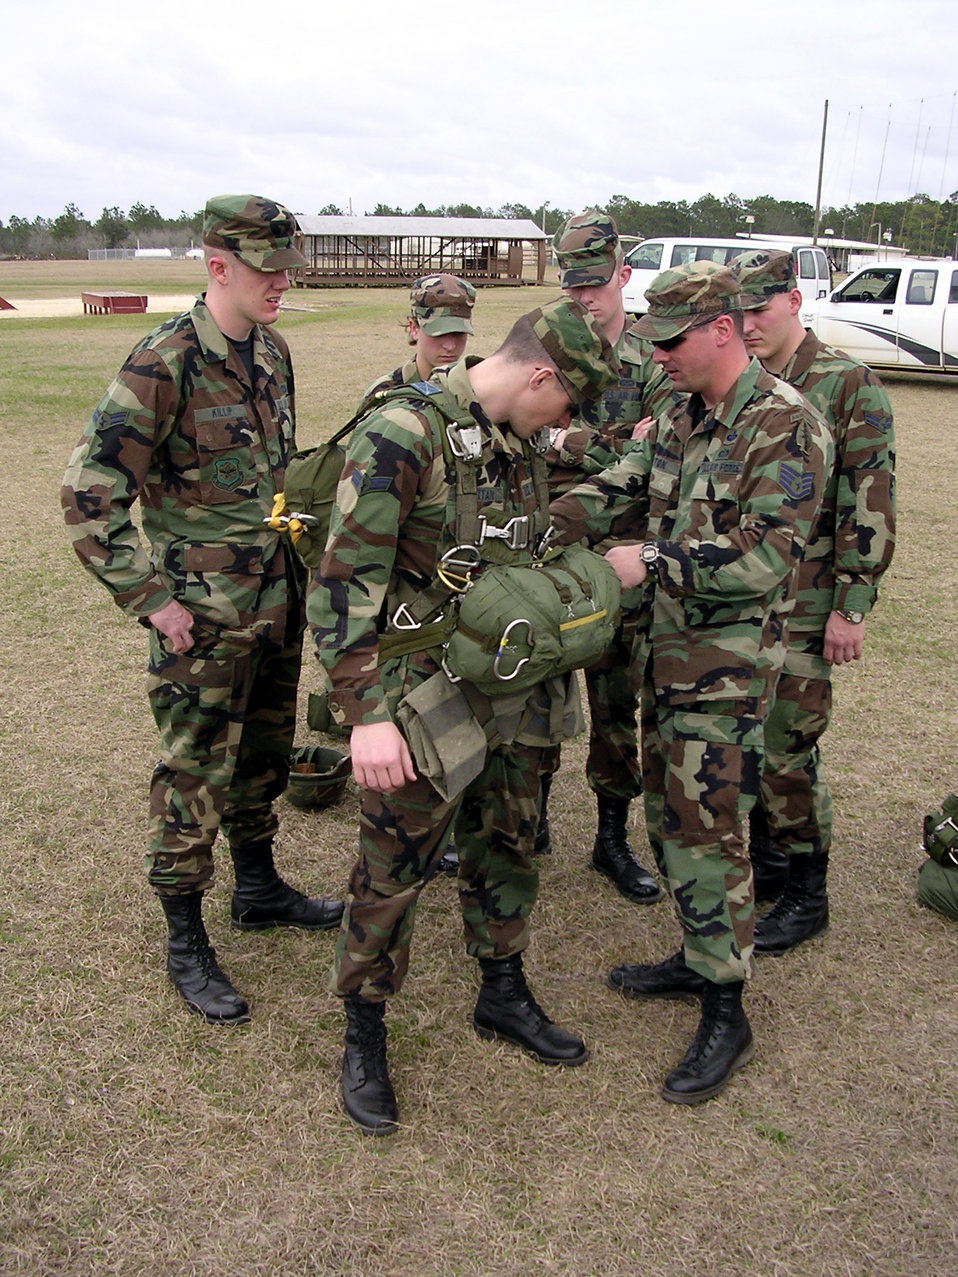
Weather recruiting seminar

HURLBURT FIELD, Fla. -- Staff Sgt. Mike Burton assists Airman 1st Class Kevin Strattan with the static line parachute rig during a special operations and airborne weather familiarization and recruiting seminar here. Sergeant Burton is a special operations weather forecaster assigned to the 10th Combat Weather Squadron's Detachment 2 at Fort Campbell, Ky. Airman Strattan is assigned to the 28th Operational Weather Squadron at Shaw Air Force Base, S.C.